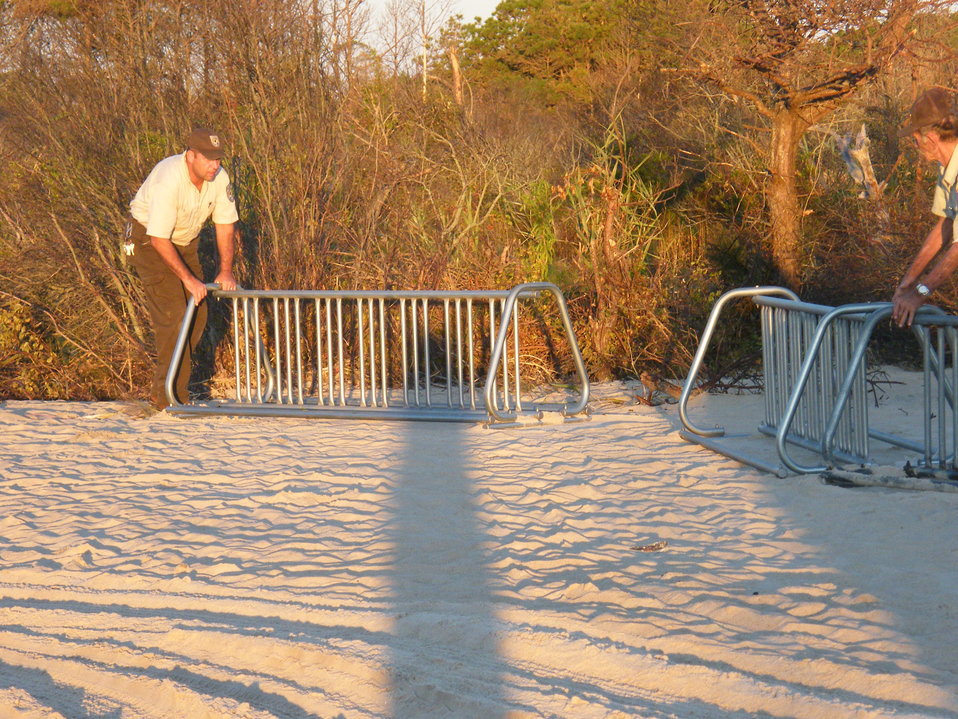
Bike Racks Being Installed at Chincoteague Beach

Refuge staff installed bike racks. And, people used them.

Michael Dixon/USFWS